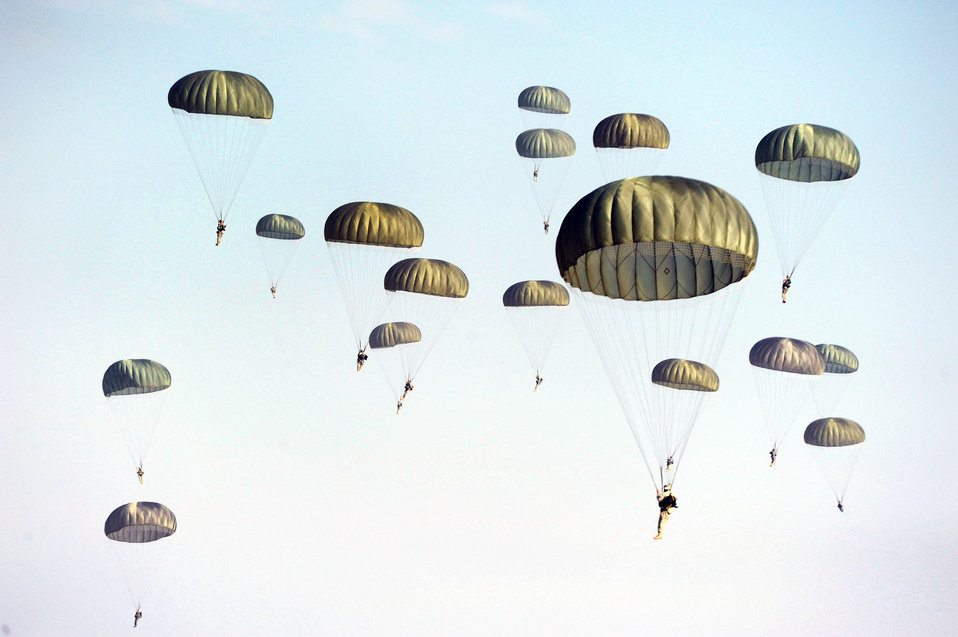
Hickam supports 507th Airborne school at Fort Benning, GA

Paratroopers from the 507th Airborne School fall from the sky over Fort Benning, Ga., Oct. 14, 2010, after jumping out of a C-17 Globemaster III from the 535th Airlift Squadron at Joint Base Pearl Harbor-Hickam, Hawaii. A C-17 aircrew from the 15th Wing flew from Hawaii to Fort Benning to support the student jump requirements of the 507th AS.